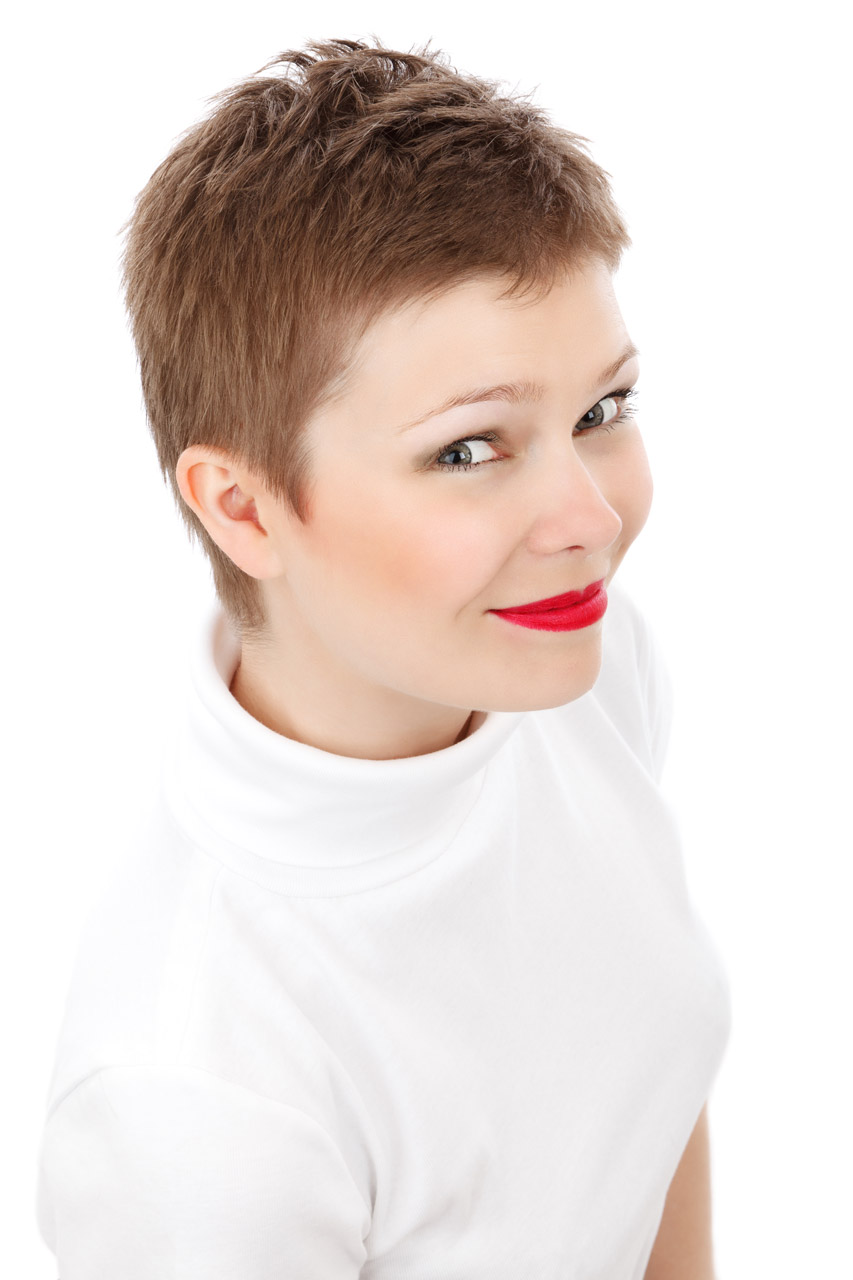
Elegant woman isolated on white background - jana svojsova.